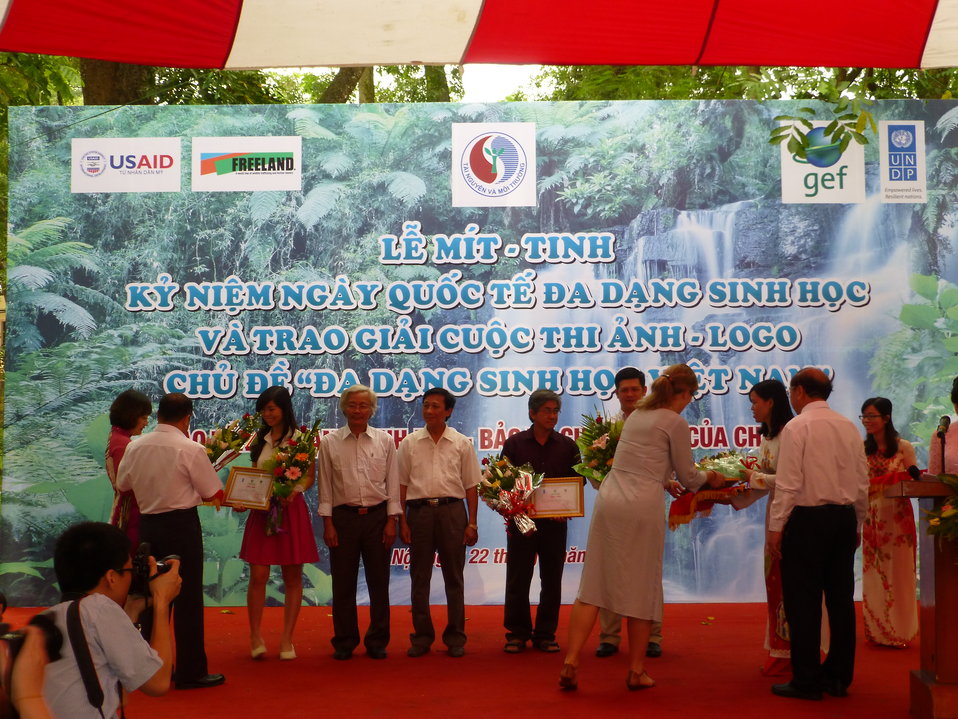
USAID Supports International Day for Biological Diversity in Hanoi